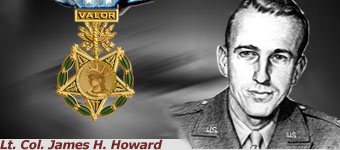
Lt. Col. James H. Howard

James H. Howard, as a major and fighter pilot in the U.S. Army Air Forces, he earned the Medal of Honor in aerial combat in World War II. He defiantly took on overwhelming odds to defend bombers on a mission to Oschersleben, Germany, Jan. 5, 1944.